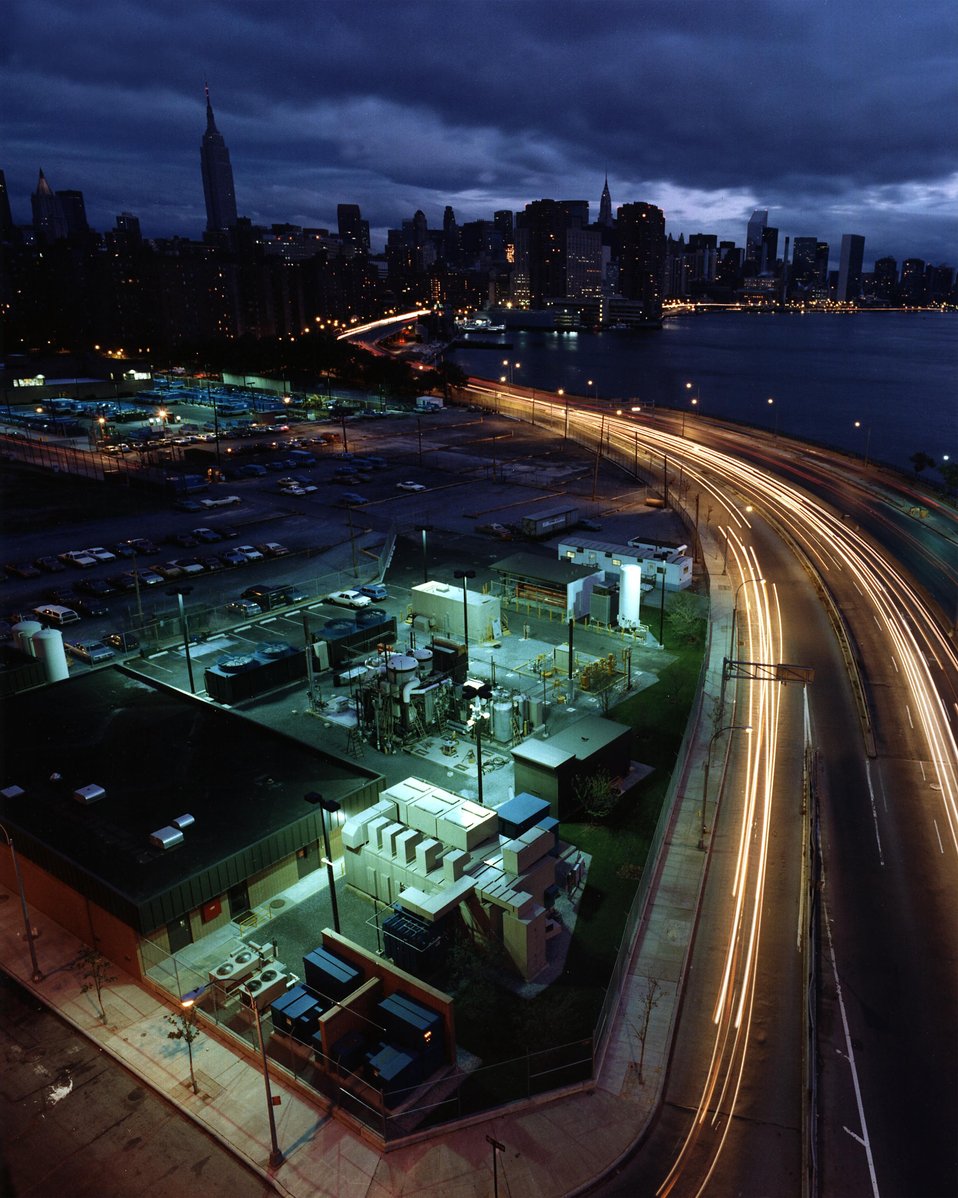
VIEW OF THE MANHATTAN FUEL CELL POWER PLANT AT NIGHT.
THE 4.8-MW FUEL CELL POWER PLANT CONTAINS A FUEL PROCESSOR FOR ENRICHING HYDROCARBON FUEL WITH HYDROGEN, A FUEL CELL POWER SECTION IN WHICH THE PROCESSED FUEL AND AIR REACT TO GENERATE DC POWER, AND AN INVERTER IN WHICH THE DC IS CHANGED TO AC. THIS TYPE OF POWER PLANT IS ESPECIALLY SUITED TO URBAN AND OTHER DENSELY POPULATED AREAS BECAUSE IT IS A MODULAR SYSTEM WHICH IS EASY TO TRANSPORT BY TRUCK AND ASSEMBLE IN A SMALL AREA. OTHER ADVANTAGES ARE ITS ALMOST NOISELESS OPERATION, LACK OF POLLUTION, AND ABILITY TO OPERATE WITHOUT LARGE QUANTITIES OF WATER. THE 4.8-MW FUEL CELL POWER PLANT IS BEING INSTALLED IN NEW YORK CITY AND WILL EVENTUALLY BE INTEGRATED INTO THE CONSOLIDATED EDISON UTILITY NETWORK.